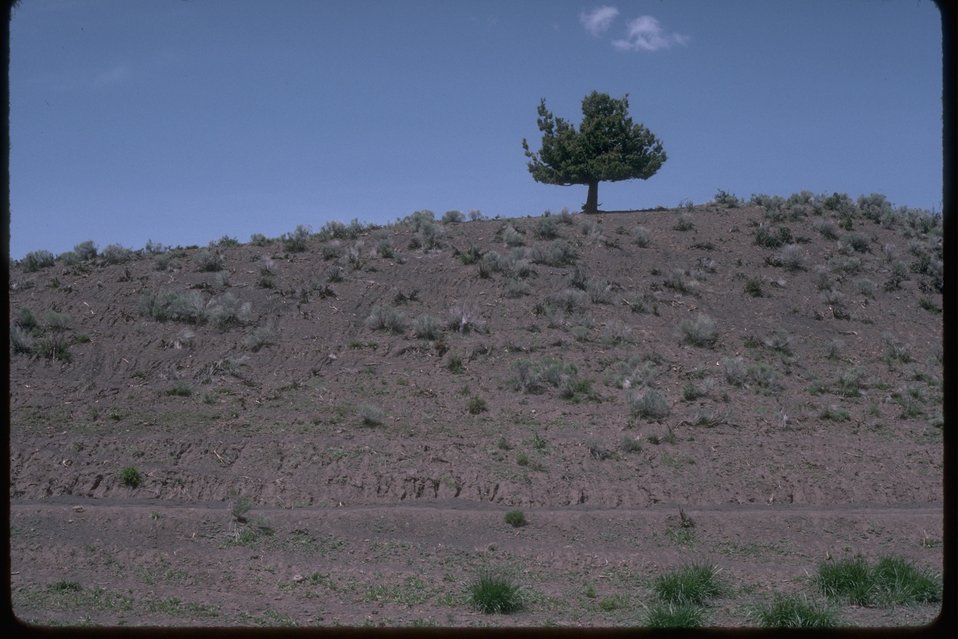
Severly eroded hill side (rill erosion) in central Oregon.